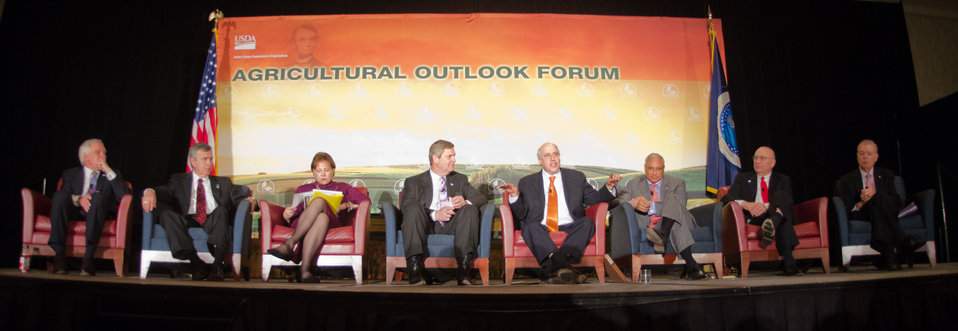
At the 2012 Agricultural Outlook Forum, “Moving Agriculture Forward” in Arlington, VA, on Thursday, February 23, 2012. 7 former Secretaries of Agriculture sat on the plenary panel “Visions of the Future” hosted by current Agriculture Secretary Tom Vilsack (L to R Former Governor Ed Schafer (ND), Senator Mike Johanns (NE), Ann Veneman, Agriculture Secretary Tom Vilsack, former Congressman Dan Glickman (KS), former Congressman Mike Espy (MS), Clayton Yeutter, and John Block).